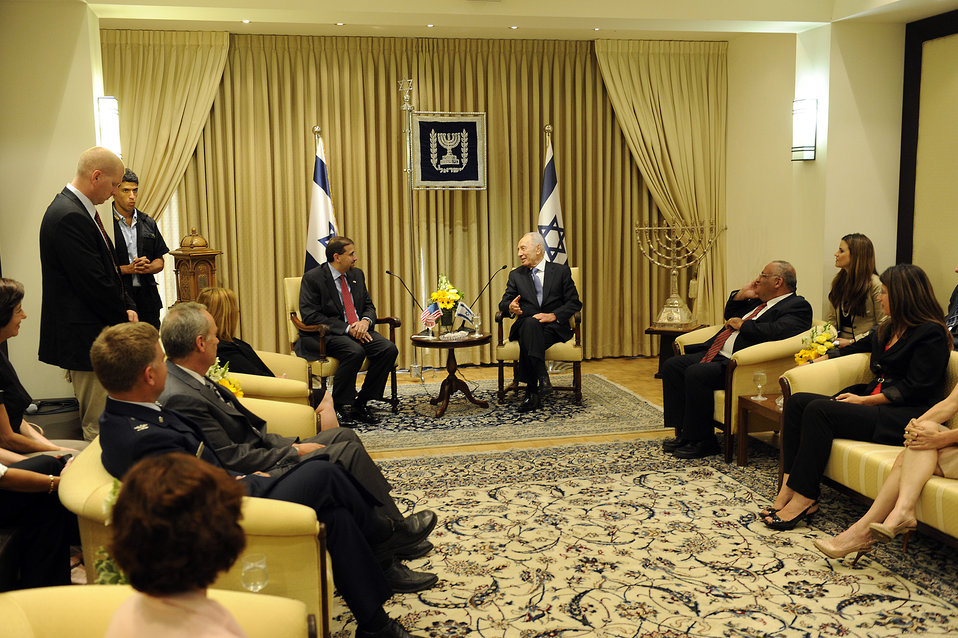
Ambassador Shapiro Meets With Israeli President Peres

U.S. Ambassador to Israel Daniel B. Shapiro meets with Israeli President Shimon Peres after presenting his credentials at the President's residence in Jerusalem on August 3, 2011.